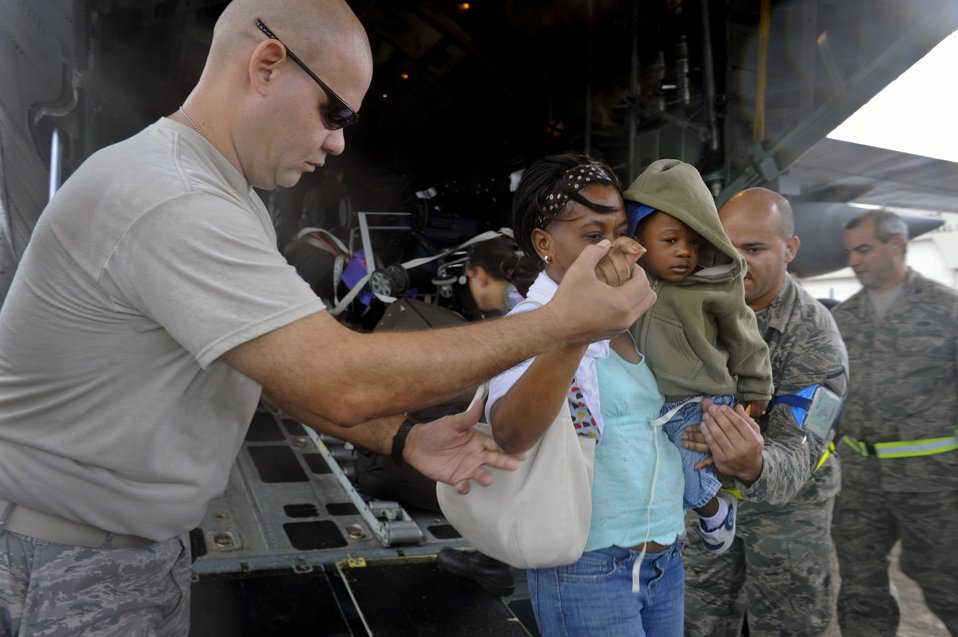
Haiti mission

Airmen from the Puerto Rico Air National Guard’s 156th Airlift Wing assist U.S. citizens off a C-130E Hercules aircraft Jan. 17, that landed in San Juan, Puerto Rico. The American citizens were evacuated from Haiti where Airmen are playing an active role in support of the relief effort there in the aftermath of a devastating earthquake.